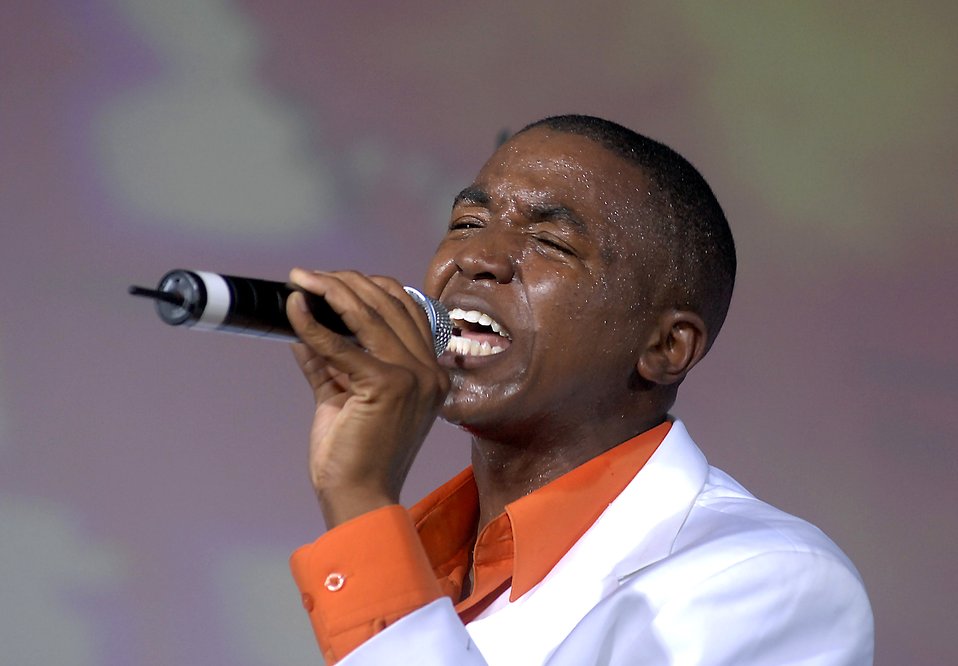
Tops in Blue entertains at Air Force Week

Staff Sgt. Keith Loudermill with Tops in Blue performs as part of Air Force Week June 5 at the Radisson Hotel Sacramento, Calif. Tops in Blue is the Air Force's premier entertainment group that performs for audiences around the globe.